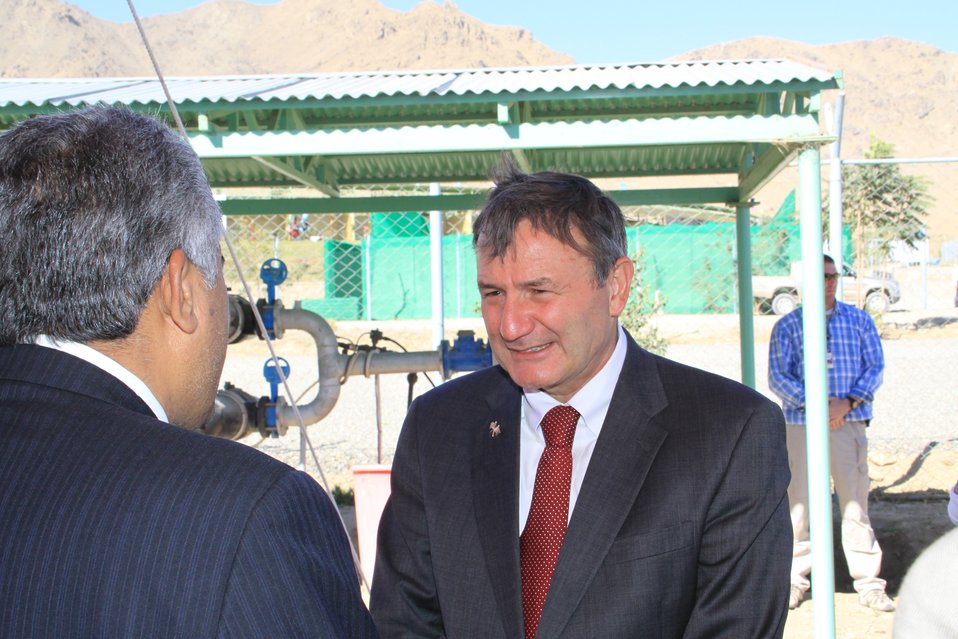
AVIPA Plus Wheat Seed Distribution 101005